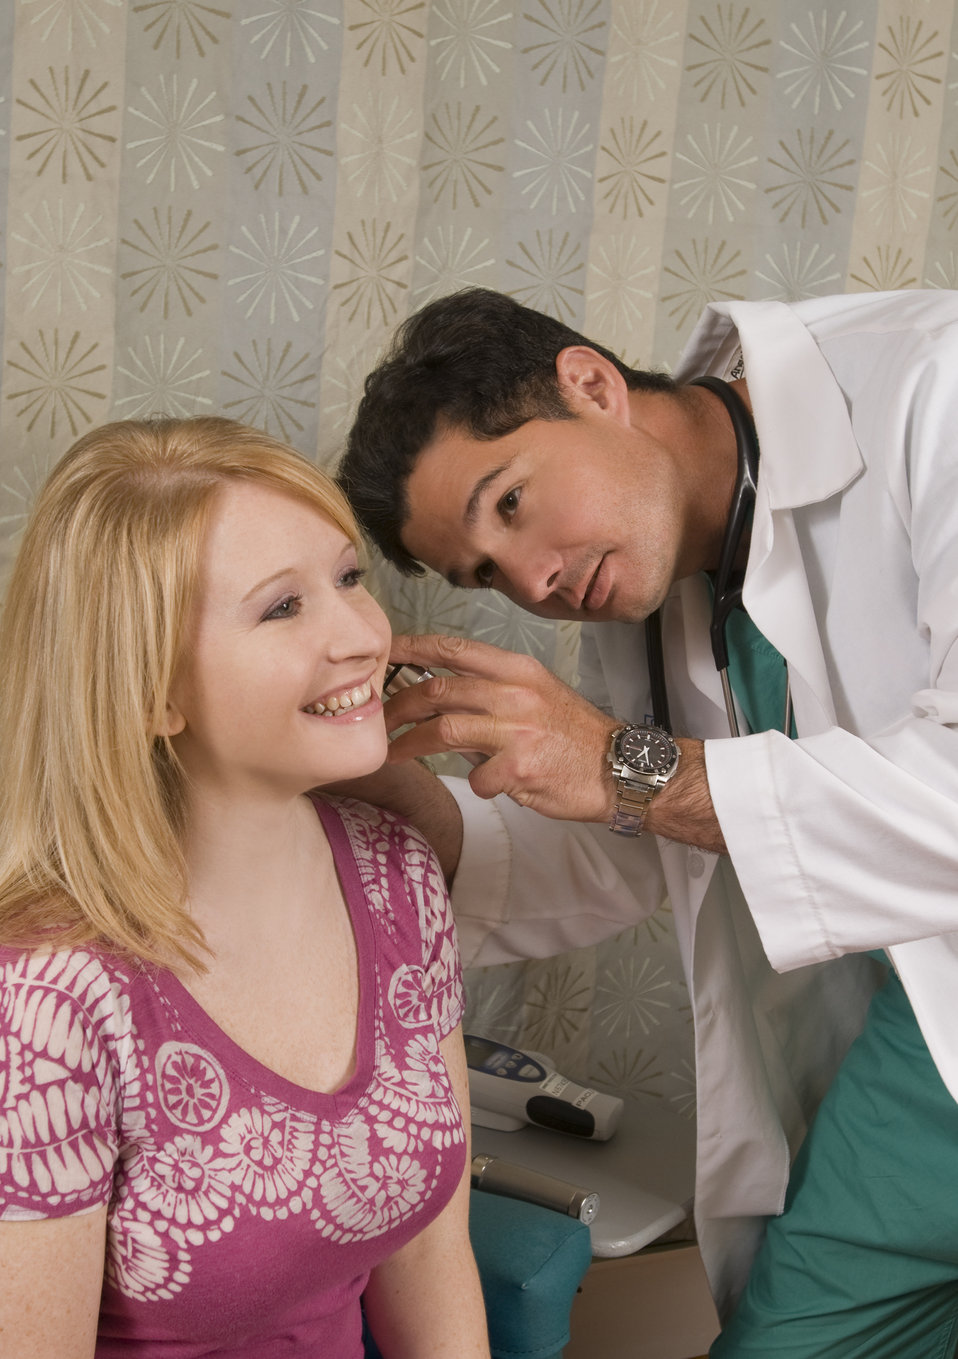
This image depicts a male physician conducting an examination of a female patient's left ear, using an otoscope, which he'd inserted into the left ear canal.